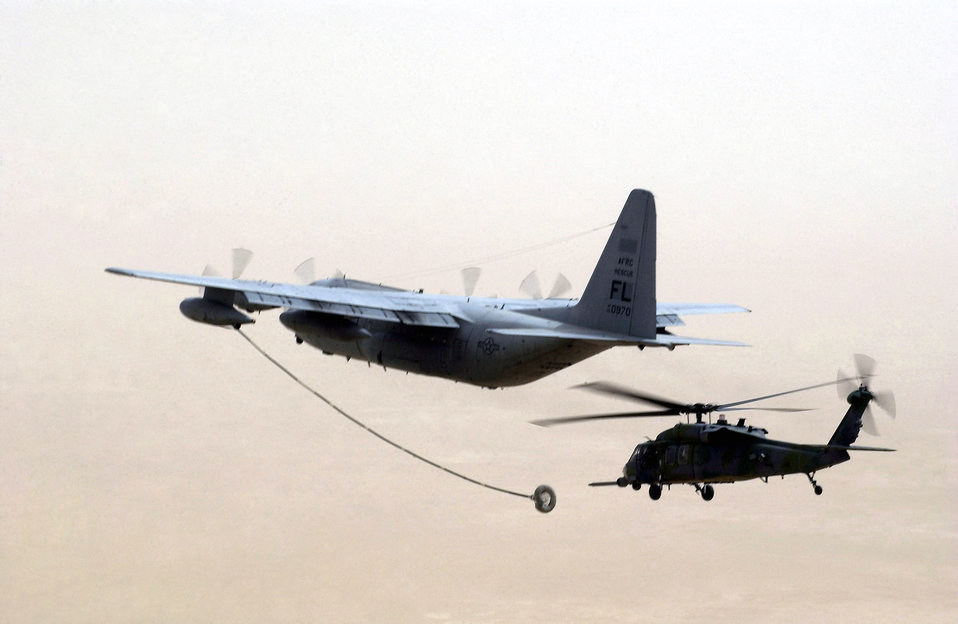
Rescue crews continue search for missing boater, NFL players

An HH-60G Pave Hawk helicopter approaches the refueling drogue of an HC-130P/N Hercules long-range refueling aircraft. Similar aircraft with 920th Rescue Wing rescue crews from Patrick Air Force Base, Fla., are joining in the search for two NFL players and one other boater missing in the Gulf of Mexico.